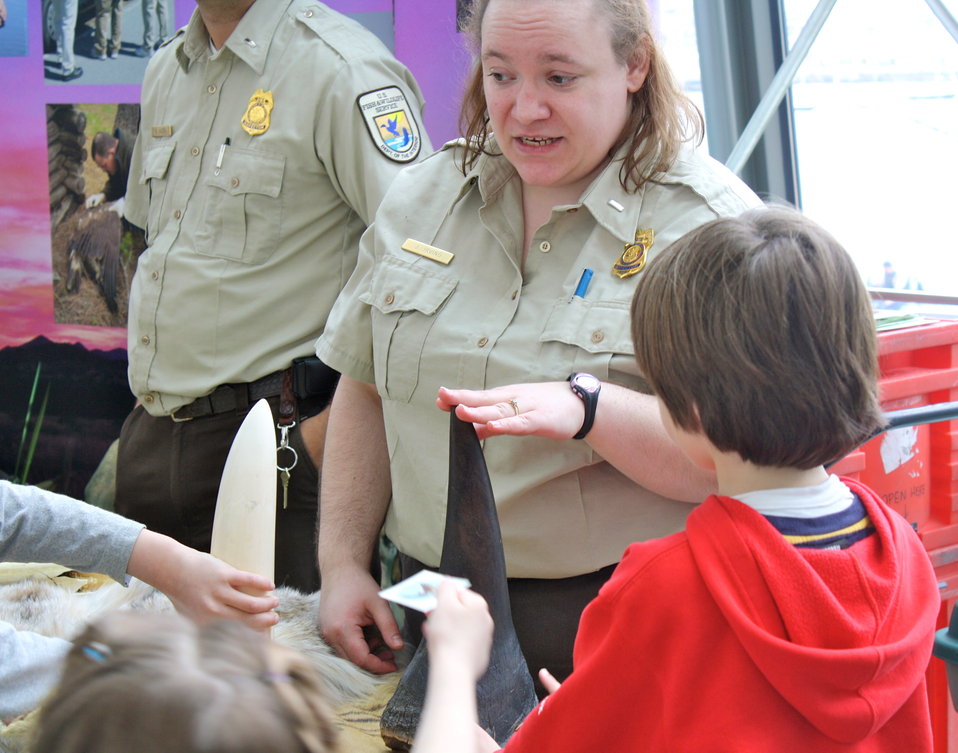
Wildlife Inspector explaining rhino horn